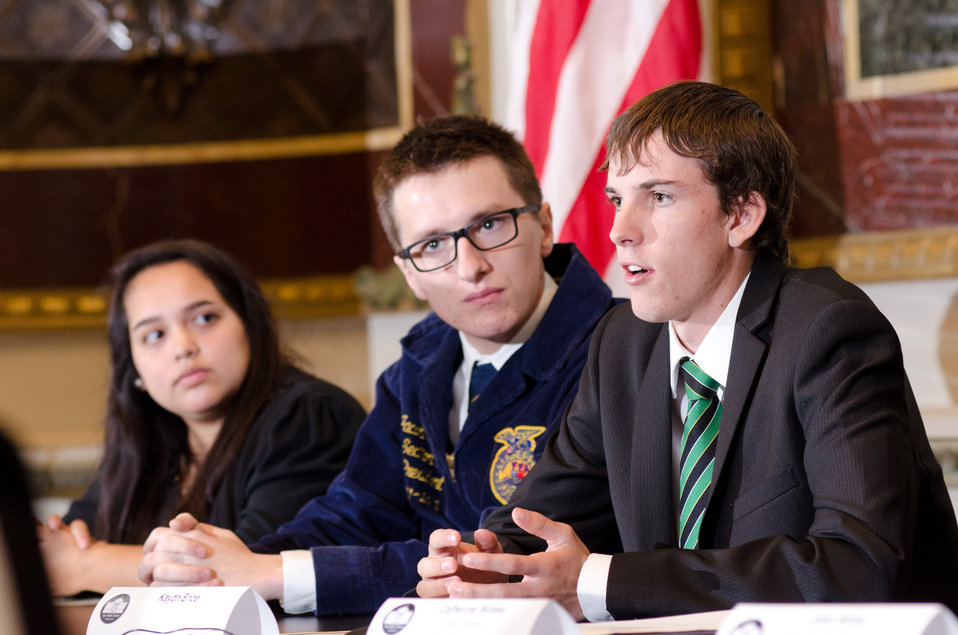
4-H member and Youth Champions of Change panelis Kaydn Ence speaks at the Champions of Change Recognition event in the Indian Treaty Room of the Executive Office Building in Washington, D.C. on Tuesday, Oct. 9, 2012. The Champions of Change program was created to honor ordinary Americans doing great work in their communities. Each week, a different sector is highlighted and groups of Champions, ranging from educators, entrepreneurs and community leaders, are recognized for the work they are doing to serve and strengthen their communities.